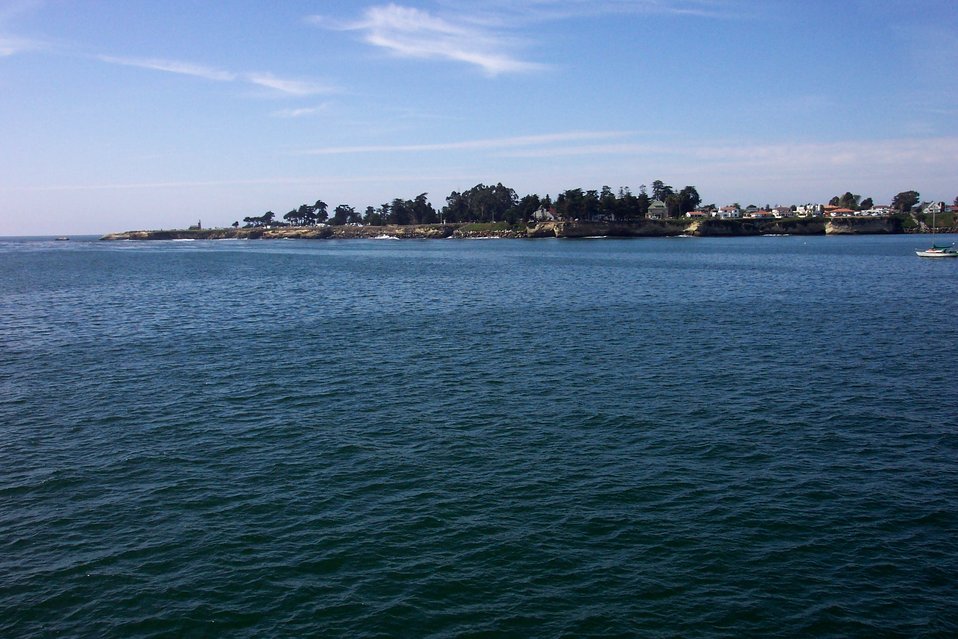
Santa Cruz Lighthouse Point, Steamers Land, and West Cliff Drive as seen from the Santa Cruz Wharf.